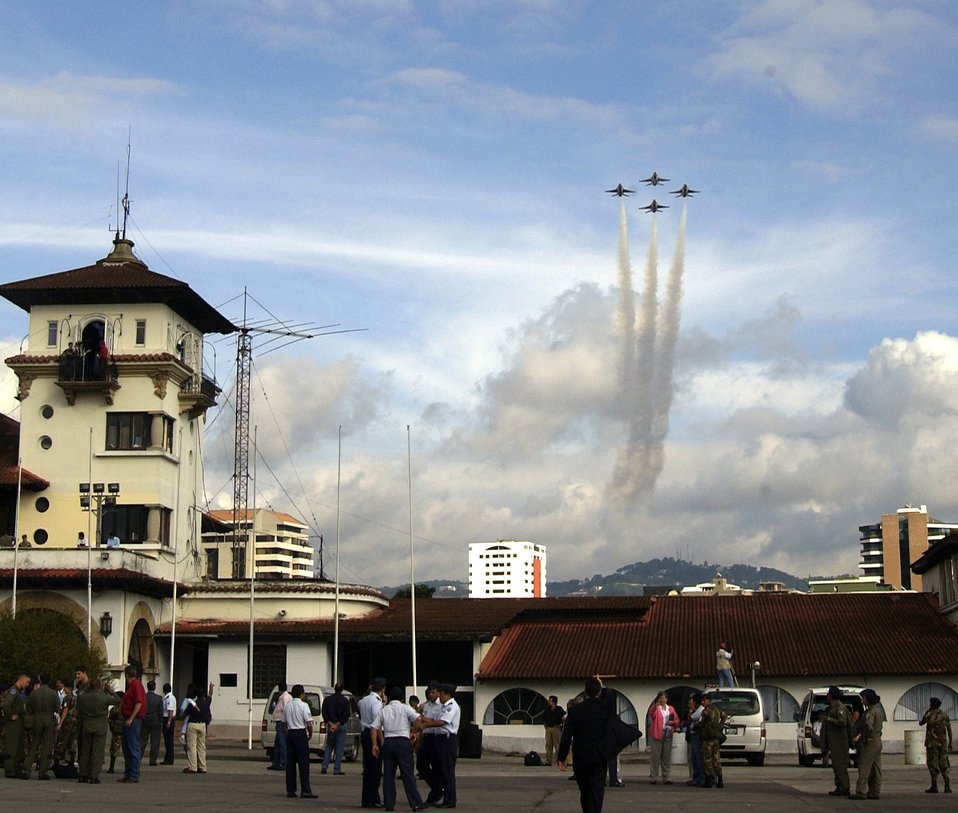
T-Birds in Guatemala

GUATEMALA CITY, Guatemala (AFPN) -- The U.S. Air Force Aerial Demonstration Team, the Thunderbirds, arrived here for the first time since 1974. The team arrived Oct. 24 to participate in the Guatemalan International Air Show 2005. Other Air Force participants here include an F-15 Eagle demonstration team from Eglin Air Force Base, Fla.; a New Hampshire Air National Guard KC-135 Stratotanker; two C-17 Globemaster IIIs from McChord AFB, Wash., and McGuire AFB, N.J.; and a C-130 Hercules from the Puerto Rico ANG.